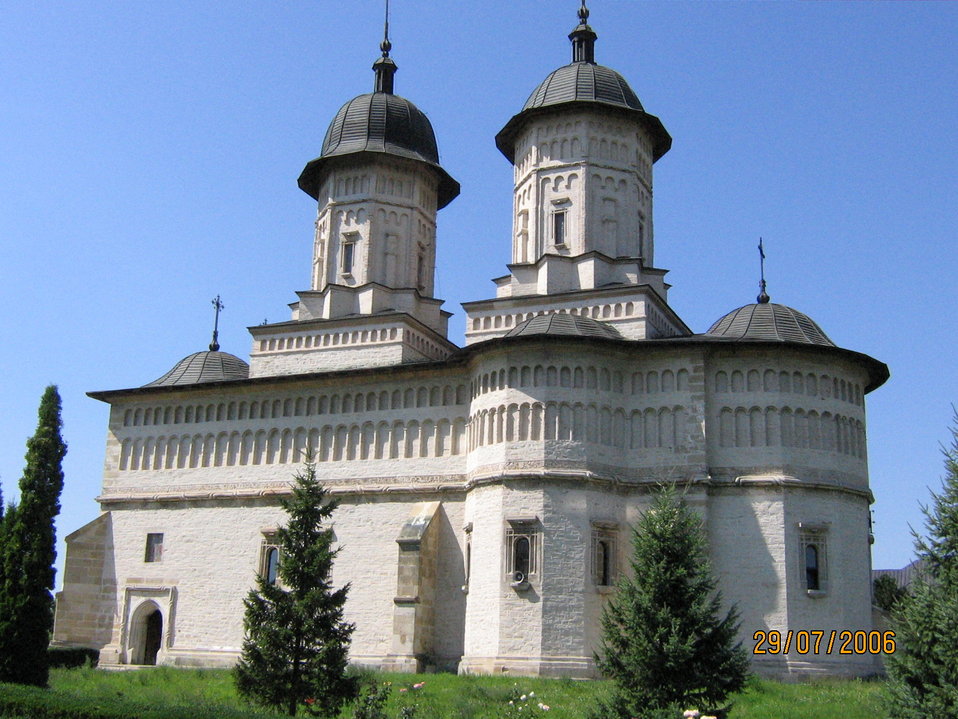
Română: Mănăstirea Cetaţuia Iaşi